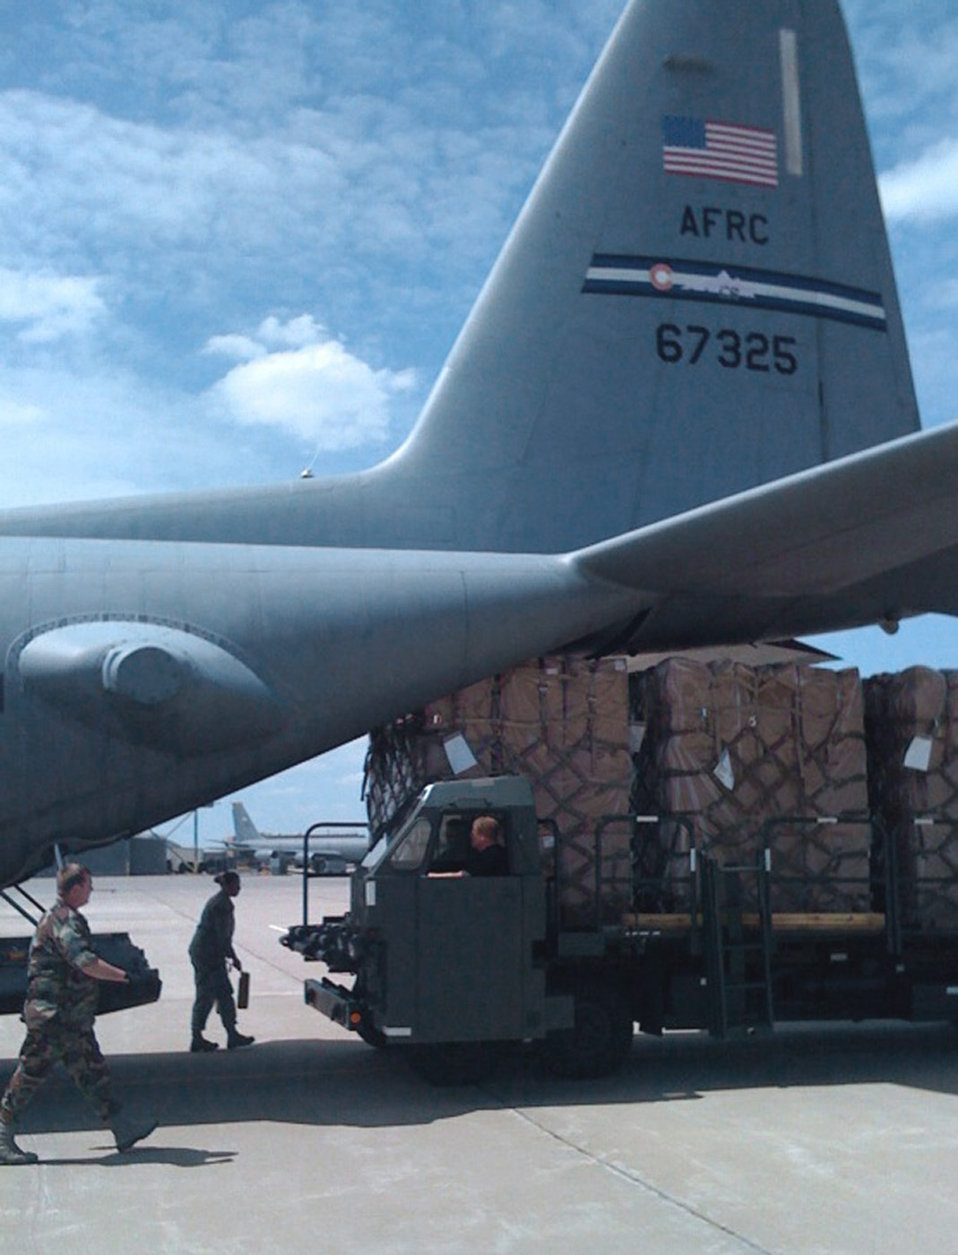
Reservists help get wheelchairs to needy Iraqi children

Members of the 185th Air Mobility Wing begin loading four crates of children's wheelchairs onto a C-130 Hercules June 11, in Sioux City, Iowa. A C-130 aircrew from Air Force Reserve Command's 302nd Airlift Wing, Peterson Air Force Base, Colo., transported the wheelchairs to Andrews AFB, Md., where a larger cargo plane transported the wheelchairs to Baghdad, Iraq.